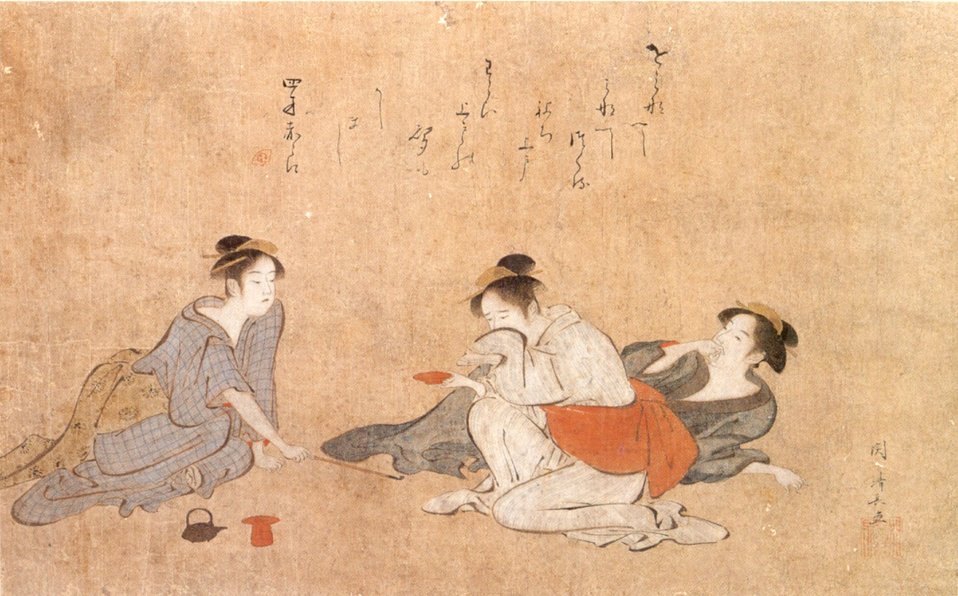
Three Drunken Women, painting by Torii Kiyonaga,, c. 1787, ink and color on paper, Honolulu Museum of Art